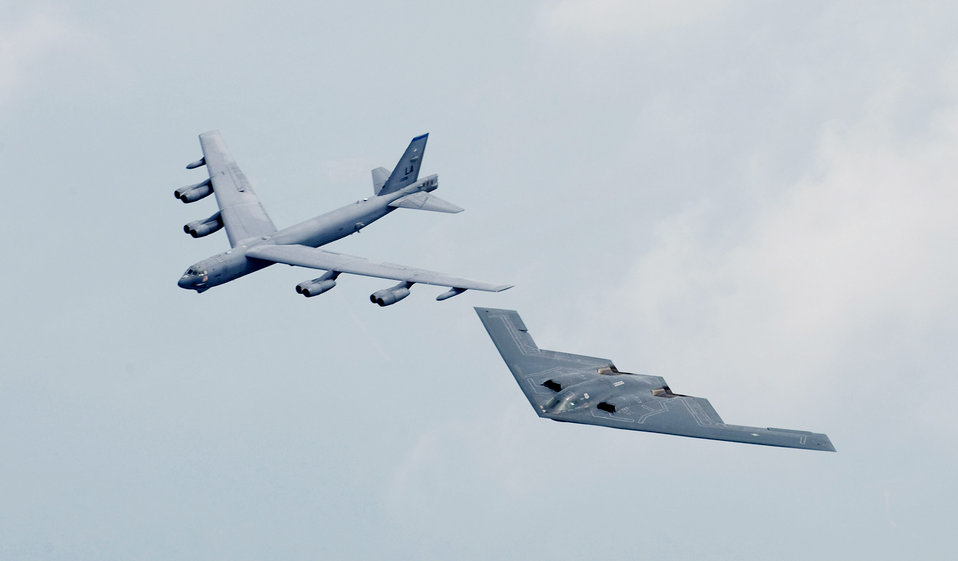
Air Force Global Strike Command officials assume B-52, B-2 mission

Air Force Global Strike Command officials assumed responsibility for the Air Force's nuclear-capable bomber force, including the B-52 Stratofortress and B-2 Spirit shown here, Feb. 1, 2010. This action completes the step-by-step transfer of all Air Force long-range, nuclear-capable assets to the Air Force's newest major command.